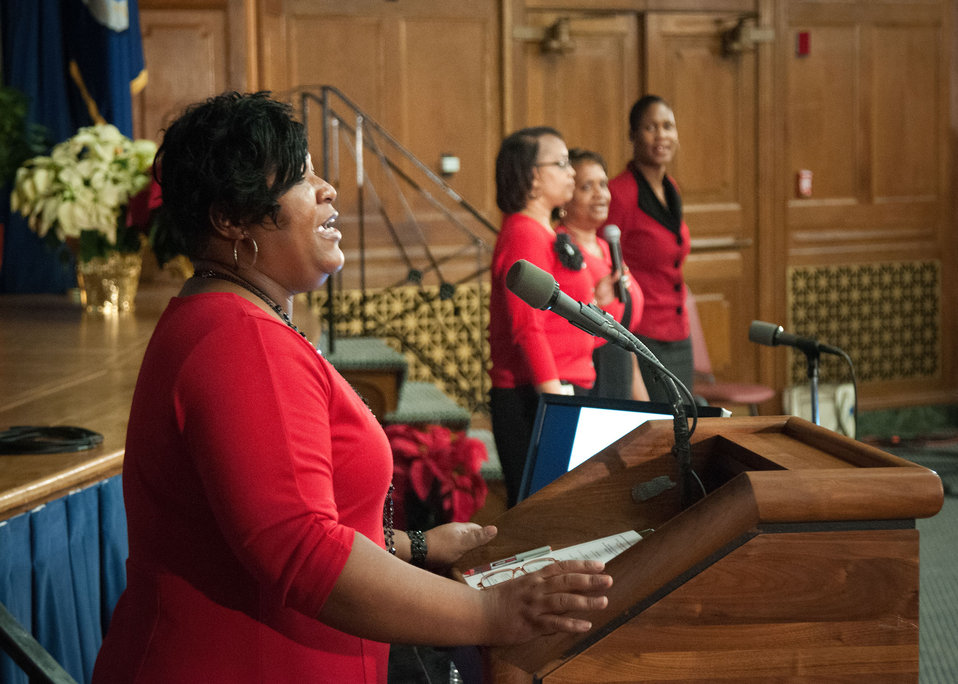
Mistress of Ceremonies Pamela Carter, Rita Mead, Reedema Rock and Susan Carter sing the U.S. Department of Agriculture (USDA) Song at USDA's Fourth Annual Cultural Transformation event held in Washington, D.C. on Tuesday, Dec. 4, 2012. The theme for the event “Faces of Cultural Transformation” Focusing on changing the way we serve our customers and cultural transformation’s benefits to employees.